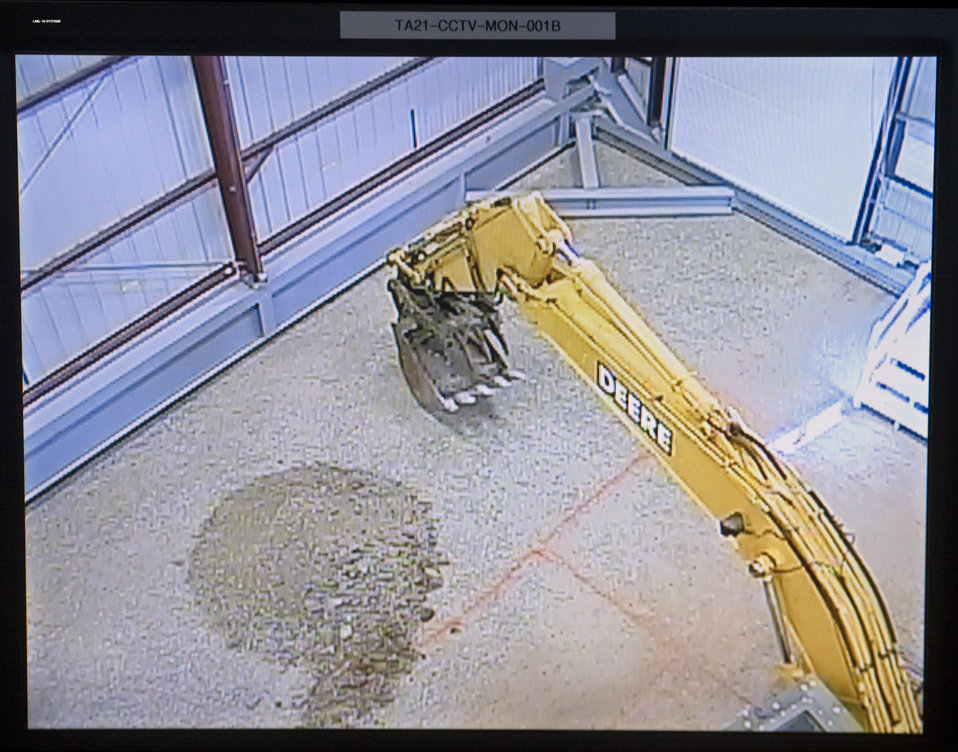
LANL Infra-red equipment

Each of the 13 digging enclosures at LANL’s World War II landfill has its own remote control room. Controllers have access to sensors, video, and infra-red equipment, and can trigger fire suppression systems if necessary.